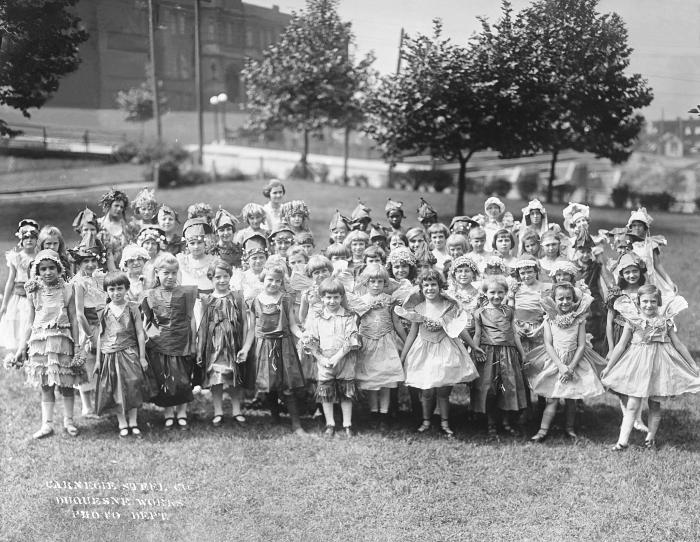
This historic photograph depicted a number of Pennsylvania schoolgirls assembled in observance of 'Child Health Day'. The original image was scanned from a glass lantern slide donated by the Minnesota Department of Health, which was at one time a part of the Carnegie Steel Co., Duquesne Works, Photo Department, and is now part of a historical collection of documents and photographs devoted to observances of Child Health Day in the United States.